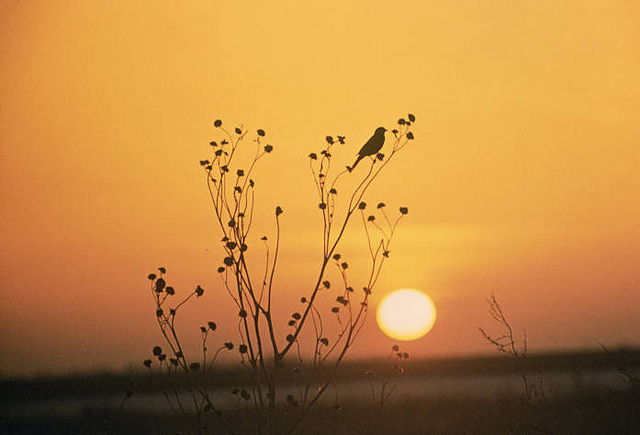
prairie sunset

Tewaukon National Wildlife Refuge, ND